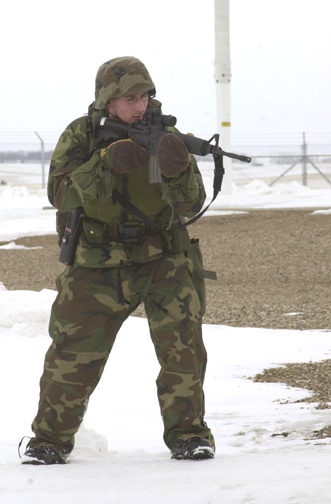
Deploying home

NORTH DAKOTA -- Airman 1st Class Stanley Graham conducts a sweep of a missile launch facility to ensure the area is secure. Airman Graham is a security response team member assigned to the 91st Missile Security Forces Squadron at Minot Air Force Base, N.D.